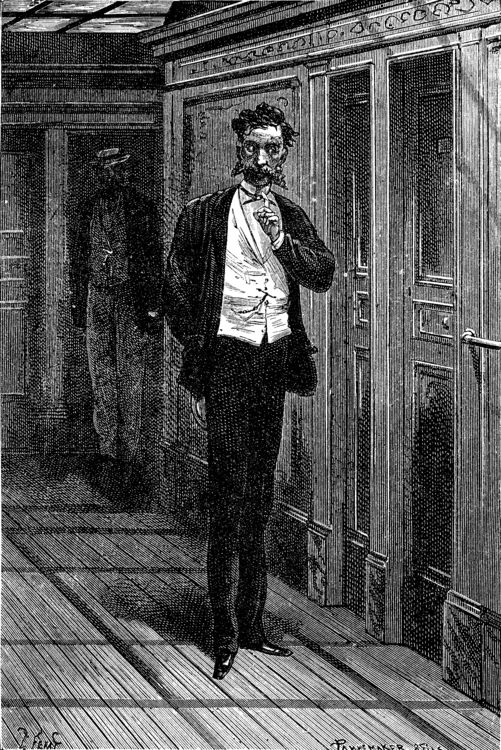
An illustration from Jules Verne's novel 'A Floating City' (1869) drawn by Jules Férat. Polski: Ilustracja powieści Juliusza Verne'a 'Pływające miasto' (1869) autorstwa Julesa Férata. Français : Jules Verne: 'Une Ville flottante' (1869), dessins par Jules Férat. Orginal text: Français : Fabian arriva près de la cabine.